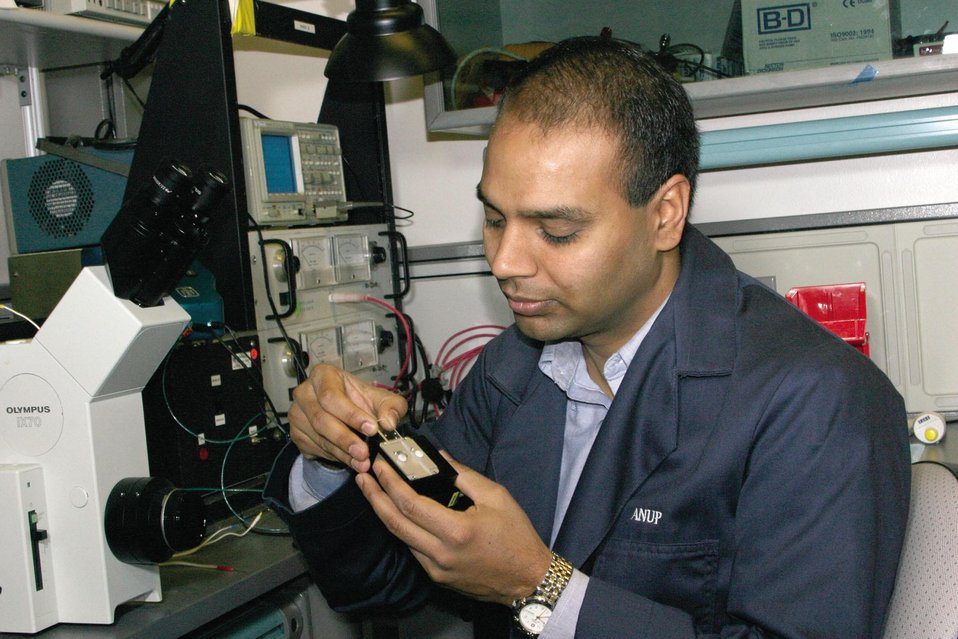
SANDIA RESEARCHER ANUP SINGH INSERTS AN IMMUNOASSAY CHIP INTO THE MICROFLUIDIC MODULE OF HAND HELD DIAGNOSTIC DEVICE.

AT SNL A DEVICE, ADAPTED FROM LAB-ON-A-CHIP DEVICES, IS BEING DEVELOPED FOR USE AS A MEDICAL DIAGNOSTIC TOOL. EXPANDING ON ESTABLISHED MICROCHIP-BASED SEPARATION TECHNOLOGIES, RESEARCHER ADAPTED A METHOD KNOWN AS IMMUNOASSAY TO A CHIP. THE COMBINATION OF THE LAB-ON-A-CHIP AND THE IMMUNOASSAY TECHNIQUE ALLOWS FAST AND SENSITIVIE ANALYSIS OF BIOMARKERS SPECIFIC TO CERTAIN DISEASES, SUCH AS GUM DISEASE AND CARDIOVASCULAR DISEASE.